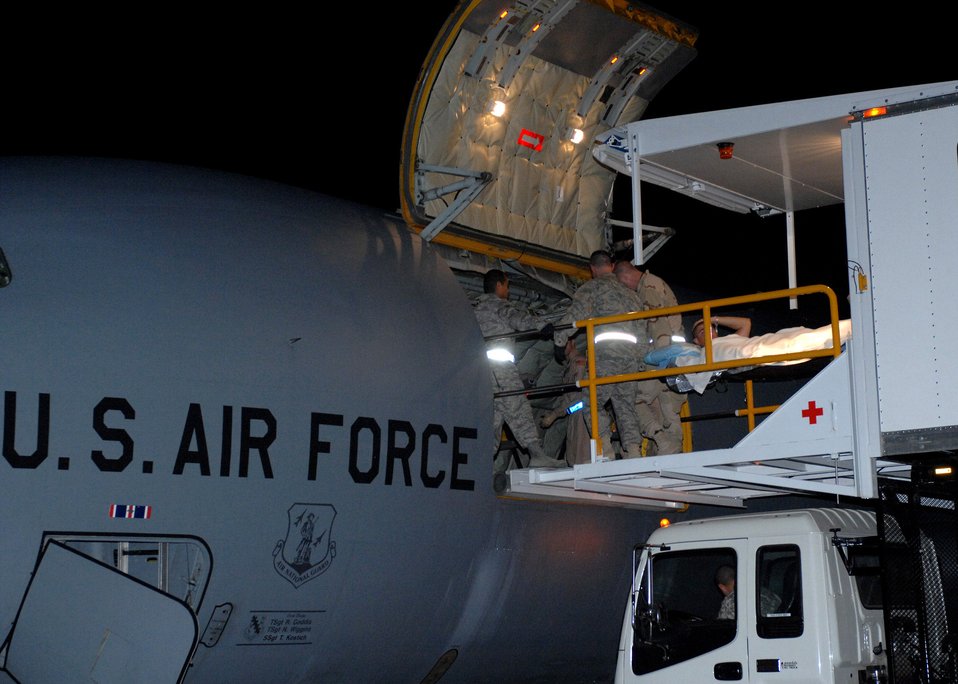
Bagram first to operate new transporter

An Air Force high deck patient loading platform was used here April 9 to transfer patients to Landstuhl Army Regional Medical Center, Germany. The new HDPLP, a special-purpose vehicle which limits the time a patient is exposed to outside elements, is one of three vehicles in the Air Force inventory.